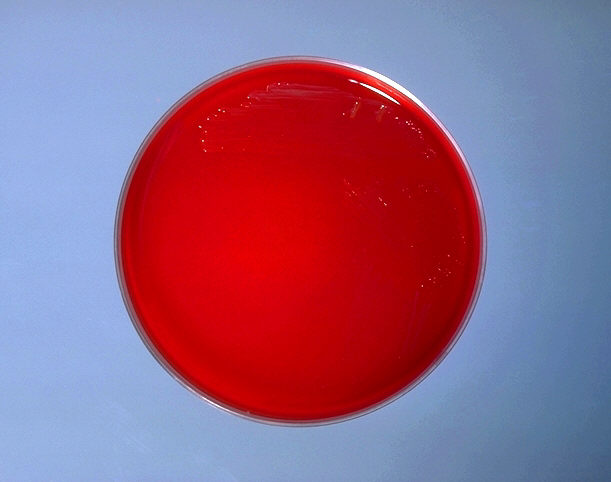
Blood agar plate culture of Corynebacterium pyogenes.